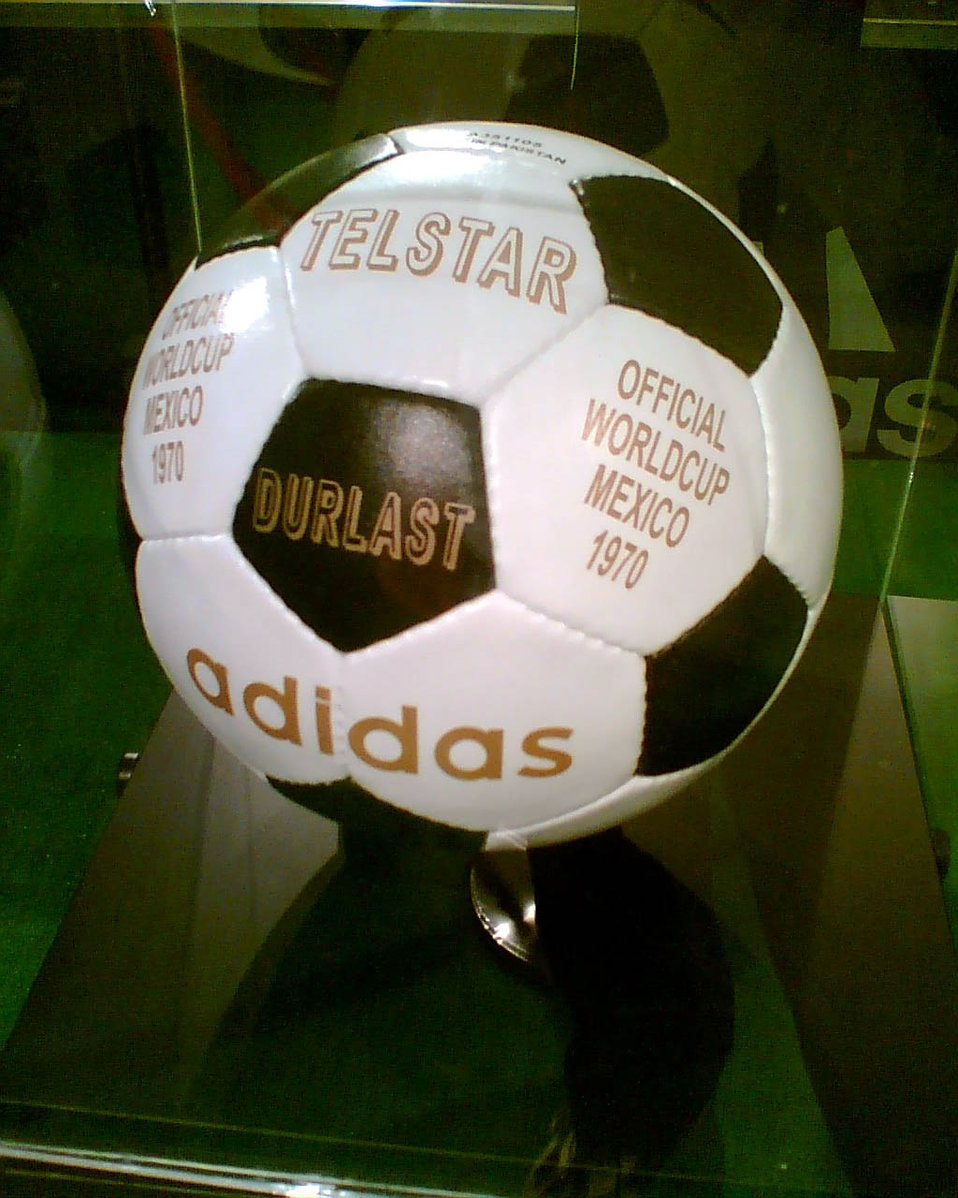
中文（繁體）: 愛迪達Telstar Durlast（1970）